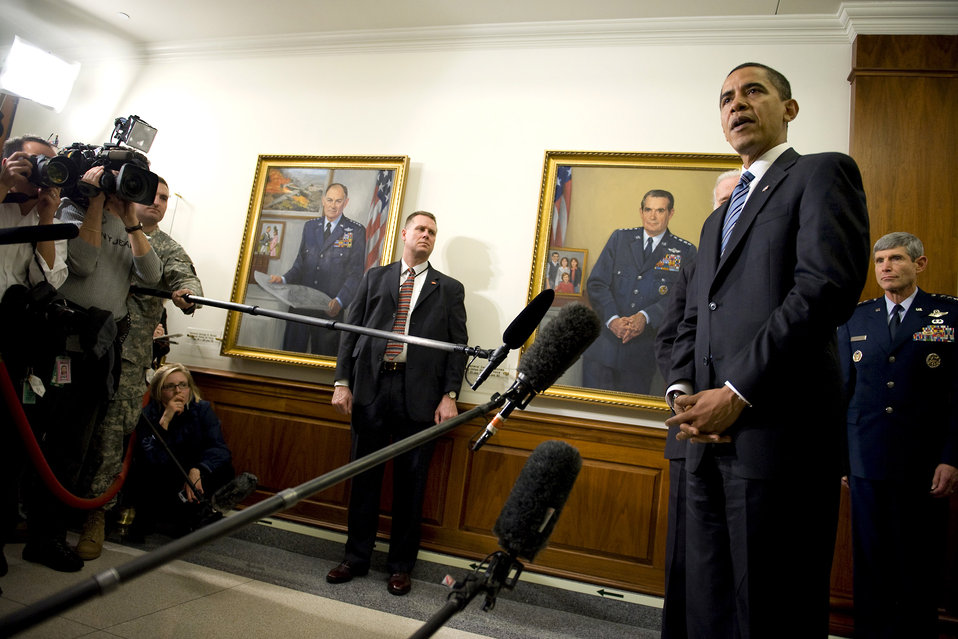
Talk to me

President Barack Obama addresses the media Jan. 28 during his first visit to the Pentagon since becoming commander in chief. President Obama met with the Joint Chiefs, including Air Force Chief of Staff Gen. Norton A. Schwartz on his right.